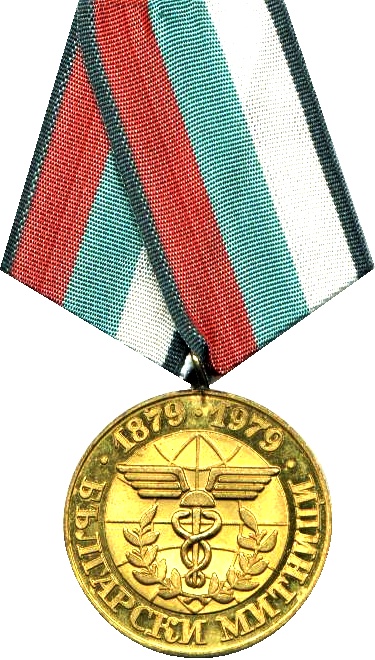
100th Anniversary Of Bulgarian Custom Houses Medal.